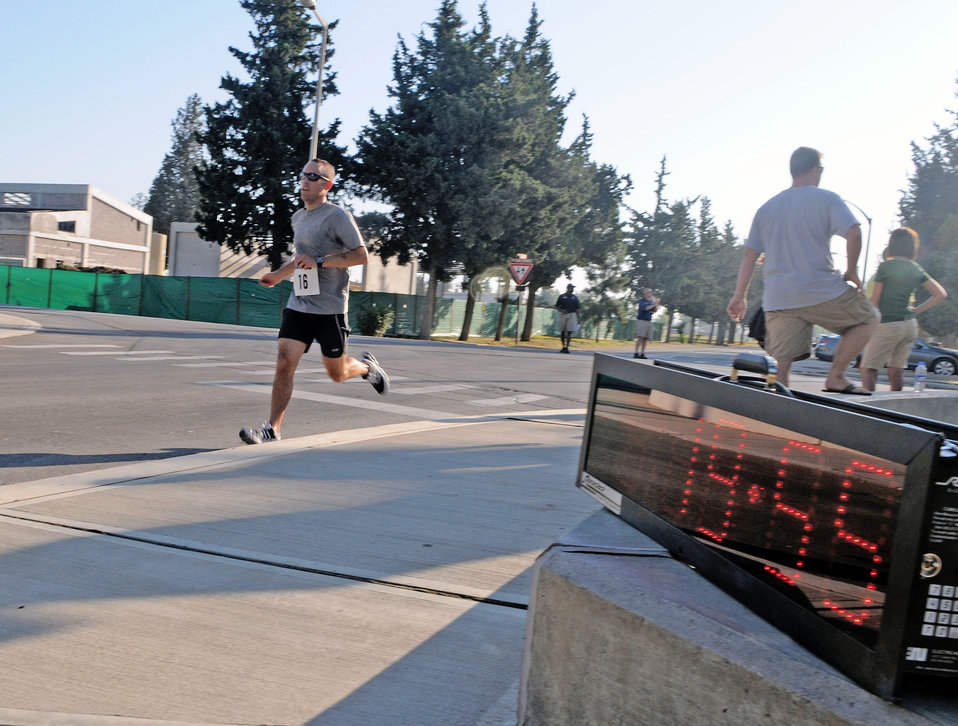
Incirlik Triathlon

Theodore Rieth, the 39th Air Base Wing sexual assault response coordinator, finishes the running portion of the Sprint Triathlon held recently at Incirlik Air Base, Turkey. Thirty-eight Airmen, civilians and family members participated in the competition. The triathlon added a twist to classic triathlon because the order of events was reversed, starting with the run, then the bike and swim instead of the classic swim, bike and run.